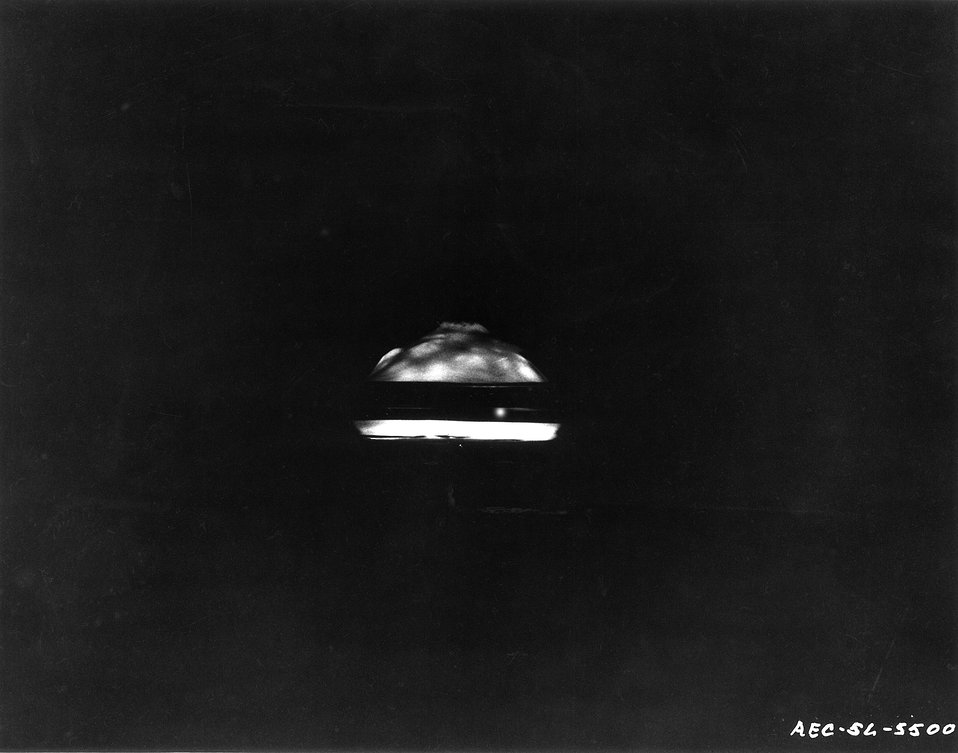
Fireball of the May 21, 1956 test detonation over Bikini Atoll.